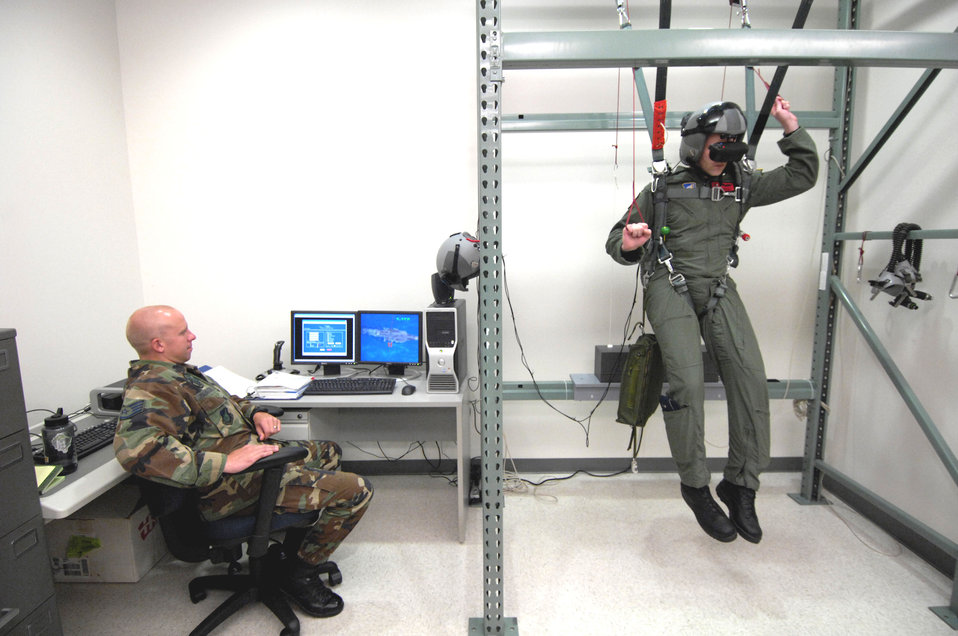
Virtual technology enhances training for aircrews

Staff Sgt. Matt Magnussen monitors 1st Lt. John Brantuk II progress as he steers his parachute during virtual training at Hickam Air Force Base, Hawaii, on Oct. 4. Sergeant Magnussen is a life support instructor with the 15th Operations Support Squadron. Lieutenant Brantuk is a pilot with the 535th Airlift Squadron.